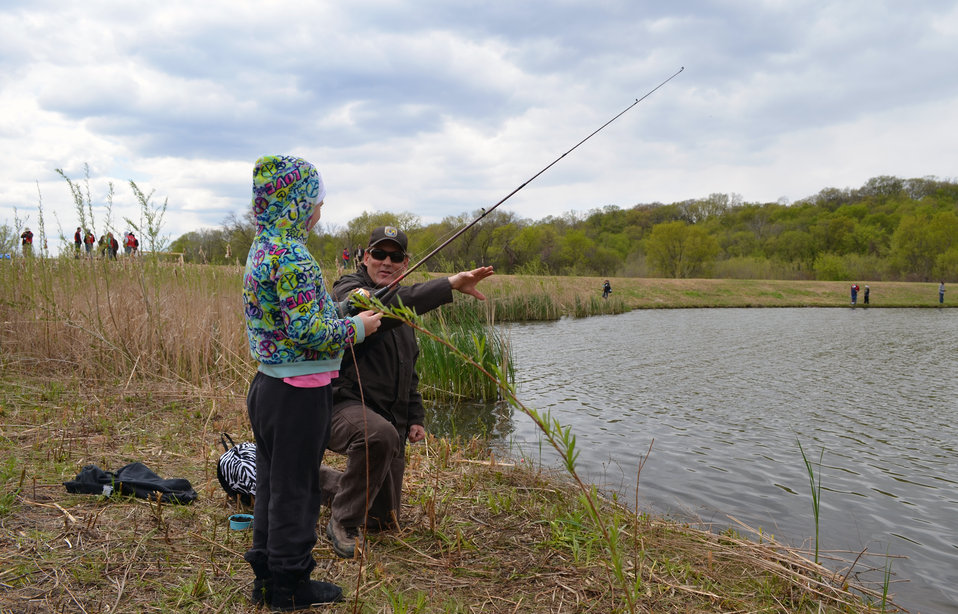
MN Valley National Wildlife Refuge employee Mike Malling assists student in a casting lesson.